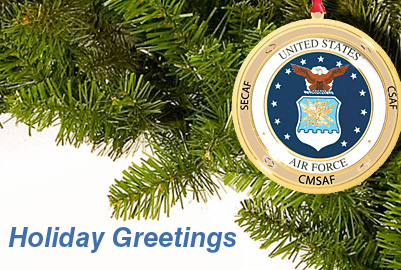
Leaders send holiday greetings

Secretary of the Air Force Michael B. Donley, Air Force Chief of Staff Gen. Norton Schwartz and Chief Master Sgt. of the Air Force James Roy send the Air Force family holiday greetings and remind all to remember those who are apart from family and friends.